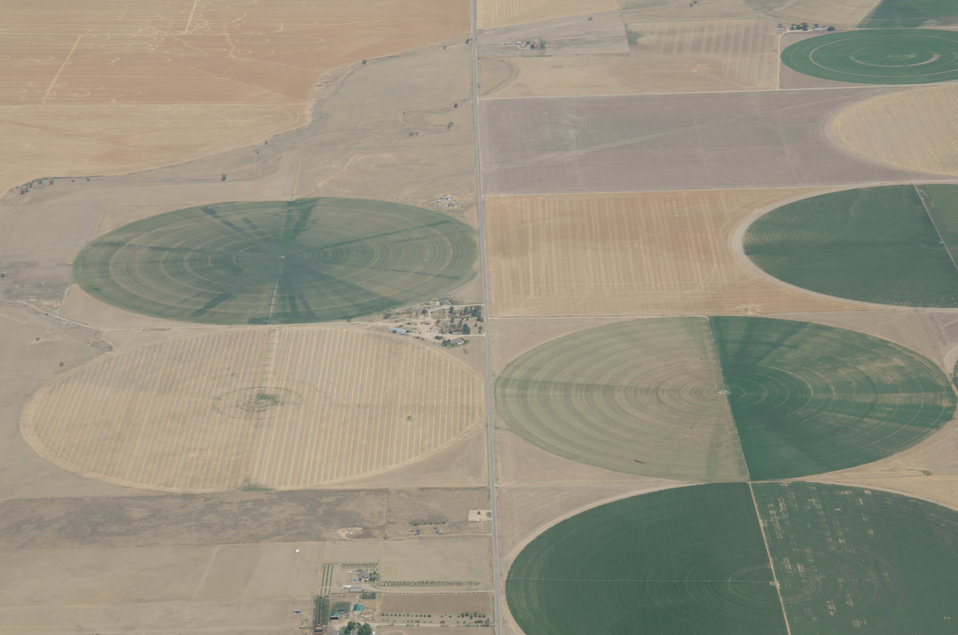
Aerial views of drought affected Colorado farm lands, 83 miles east of Denver, Colorado on Saturday, July 21, 2012. Green areas are irrigated, the yellow areas are dryland wheat crops.